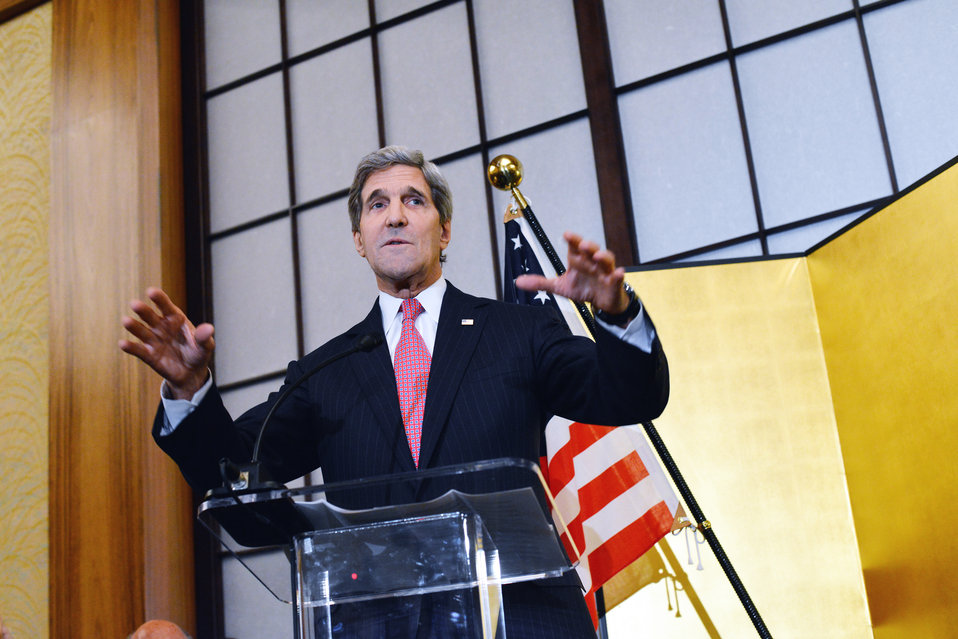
Secretary Kerry Delivers Remarks at a Reception in Honor of Ambassador Kennedy

U.S. Secretary of State John Kerry delivers remarks at a reception in honor of U.S. Ambassador to Japan Caroline Kennedy at the Japanese Ambassador to the United States' residence in Washington, D.C., on November 12, 2013.